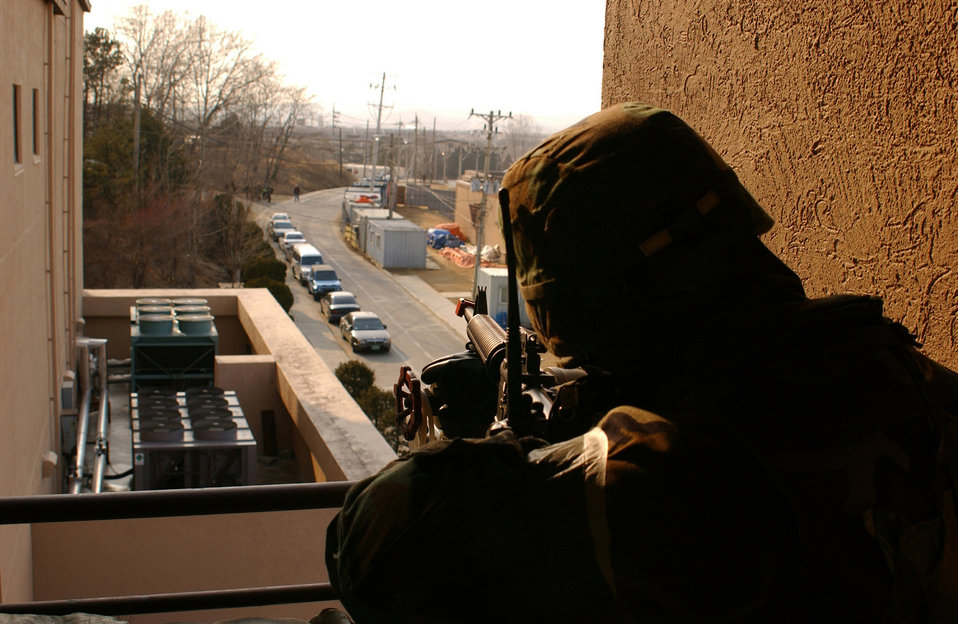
High position

OSAN AIR BASE, South Korea -- Senior Airman Justin Corcoran takes aim at simulated aggressors during an exercise here March 8. Airman Corcoran is assigned to the 51st Communications Squadron.